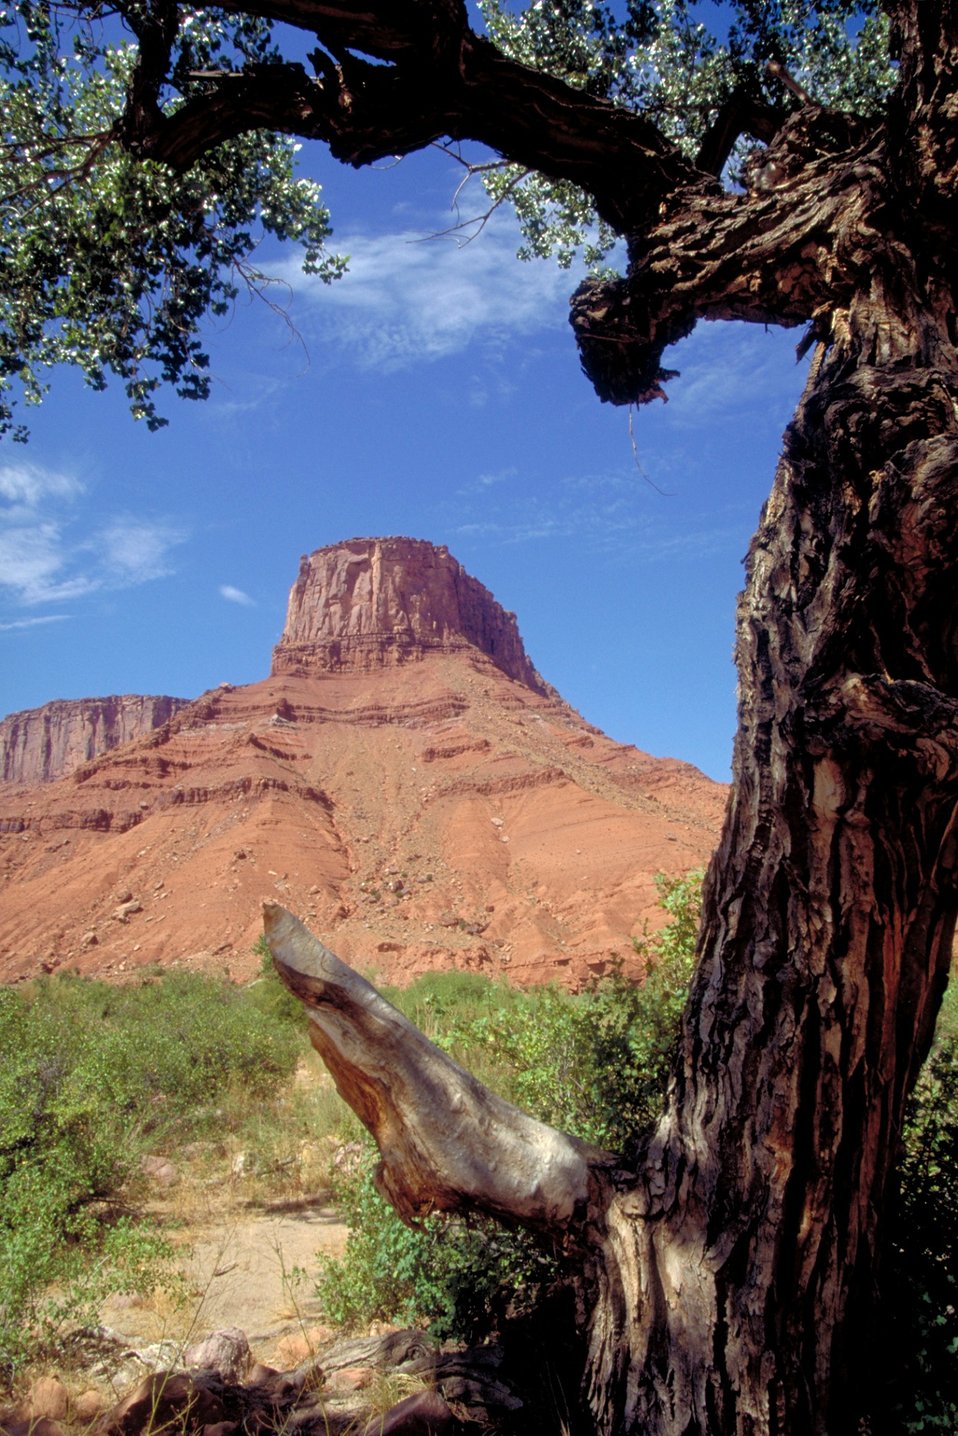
Butte along Colorado Riverway, Highway 128 near Moab, Utah.